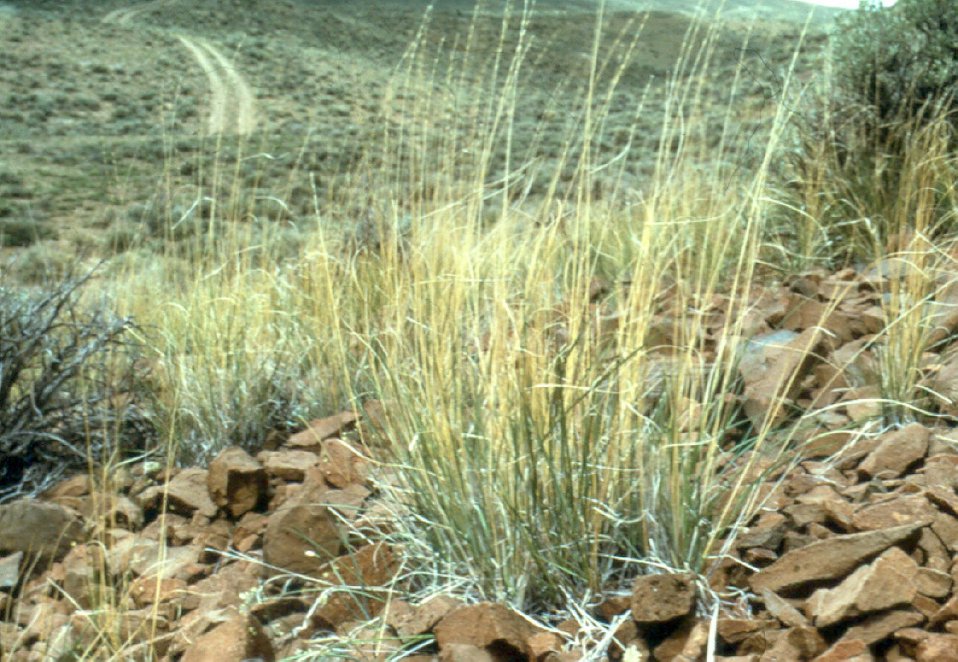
Blue Bunch Wheat Grass Salmon FIeld Office UCSC Upper Columbia Salmon Clearwater District